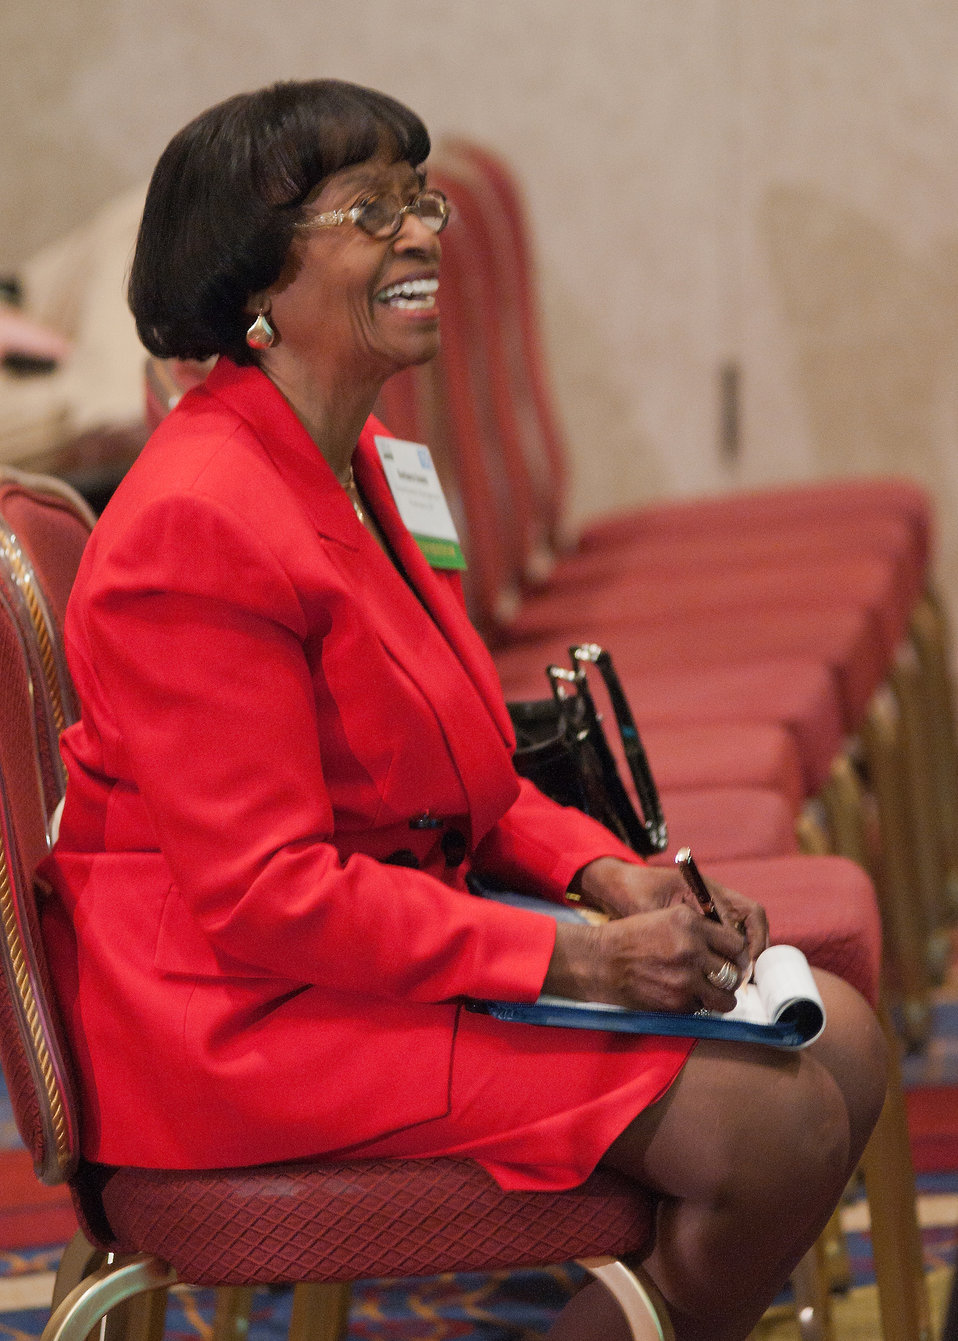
Barbara Evans, Visitors Center, Departmental Management, United States Department of Agriculture listened to speakers of the Education and Cooperation Track breakout session - Innovative Solutions for Meeting the Challenges of Small and Disadvantaged Farmers at the 2012 Agricultural Outlook Forum, “Moving Agriculture Forward, Growing, Innovating and Celebrating 150 Years” held at the Crystal gateway Marriott Hotel Arlington, Virginia, Friday, February 24, 2012. This year's forum coincides with the 150th anniversary of the Department of Agriculture.